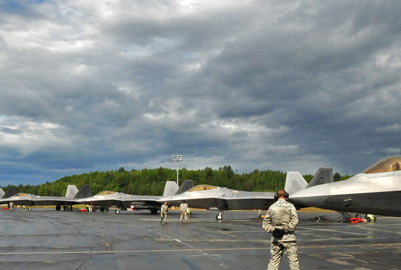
Raptors at Red Flag-Alaska

F-22 Raptor pilots wait for maintainers to give the sign to start the mission during a rainy day July 27 at Elmendorf Air Force Base, Alaska for Red Flag-Alaska. Red Flag is a Pacific Air Forces commander-based field training exercise for U.S. coalition forces.